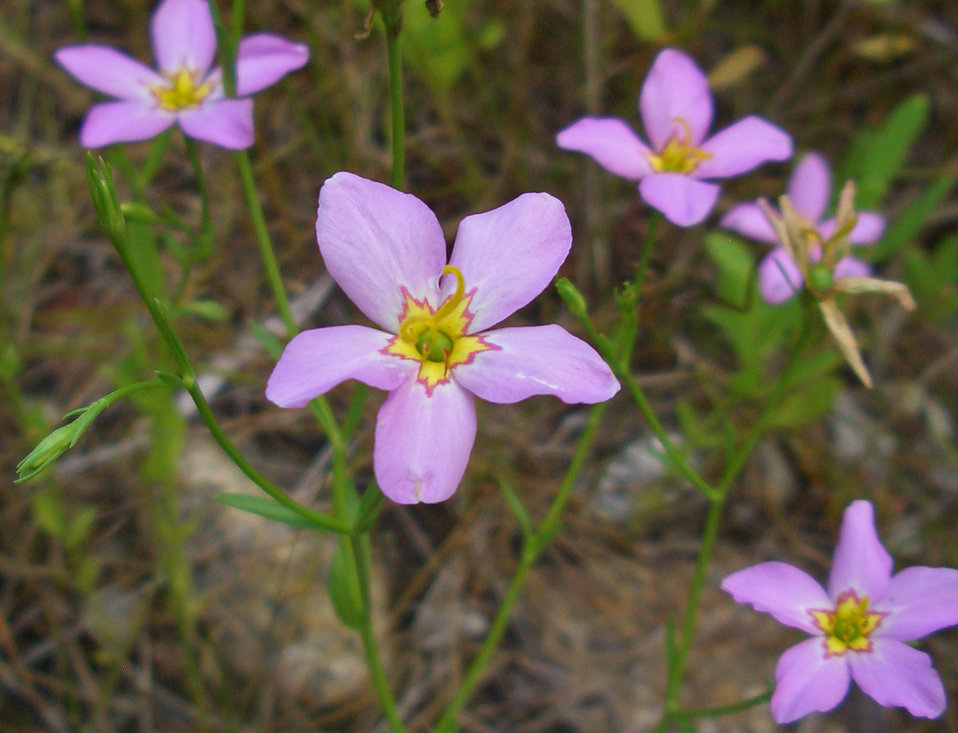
Salt marsh pink

Stewart B. McKinney National Wildlife Refuge, CT.